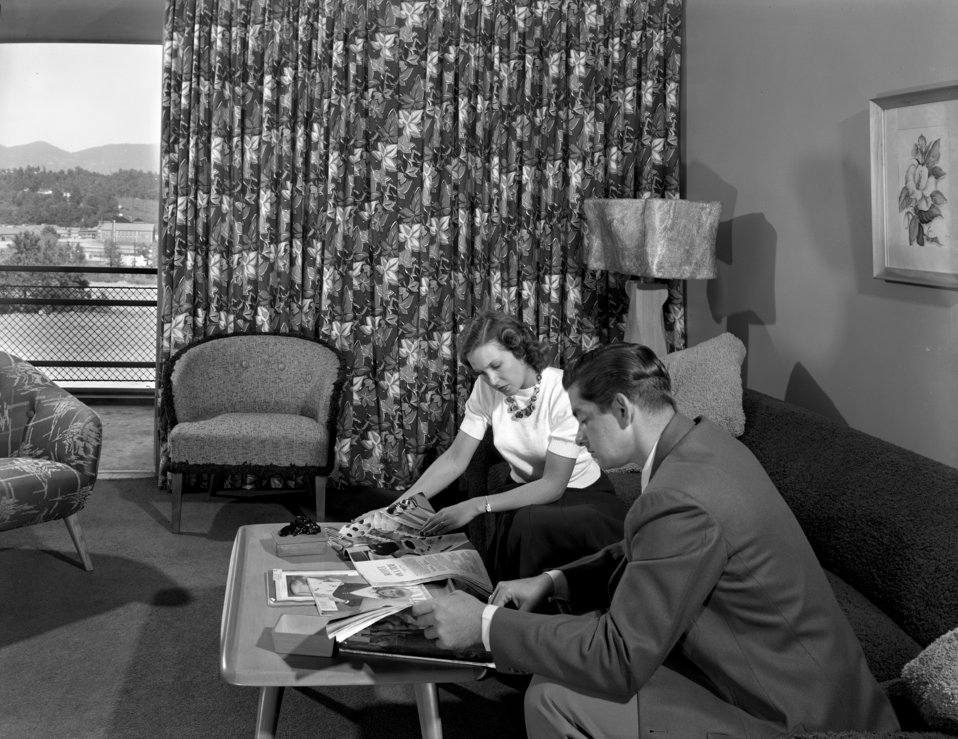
Garden Apartments Interior Oak Ridge 1949

5719-5c DOE photo Ed Westcott 9-20-1949 Oak Ridge Tennessee